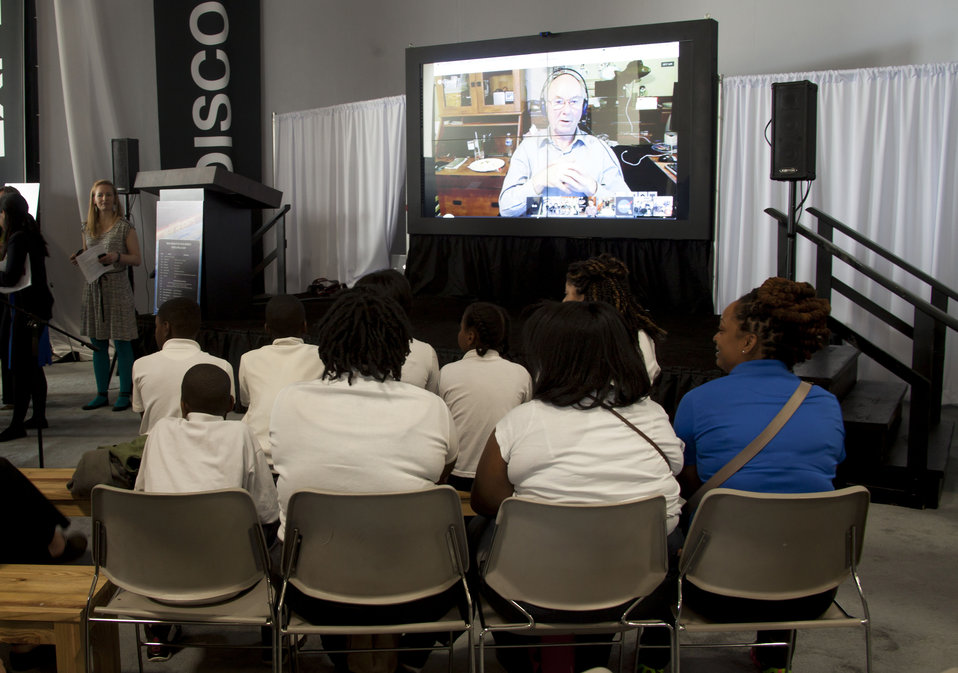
Middle School Students Participate in a Virtual Field Trip to Mars

Kramer Middle School students participate in a virtual field trip to Mars through a Google Hangout with NASA subject matter experts and the U.S. Department of State at the USA Science and Engineering Festival (USASEF) in celebration of National Science Week in Washington, D.C., on April 25, 2014.